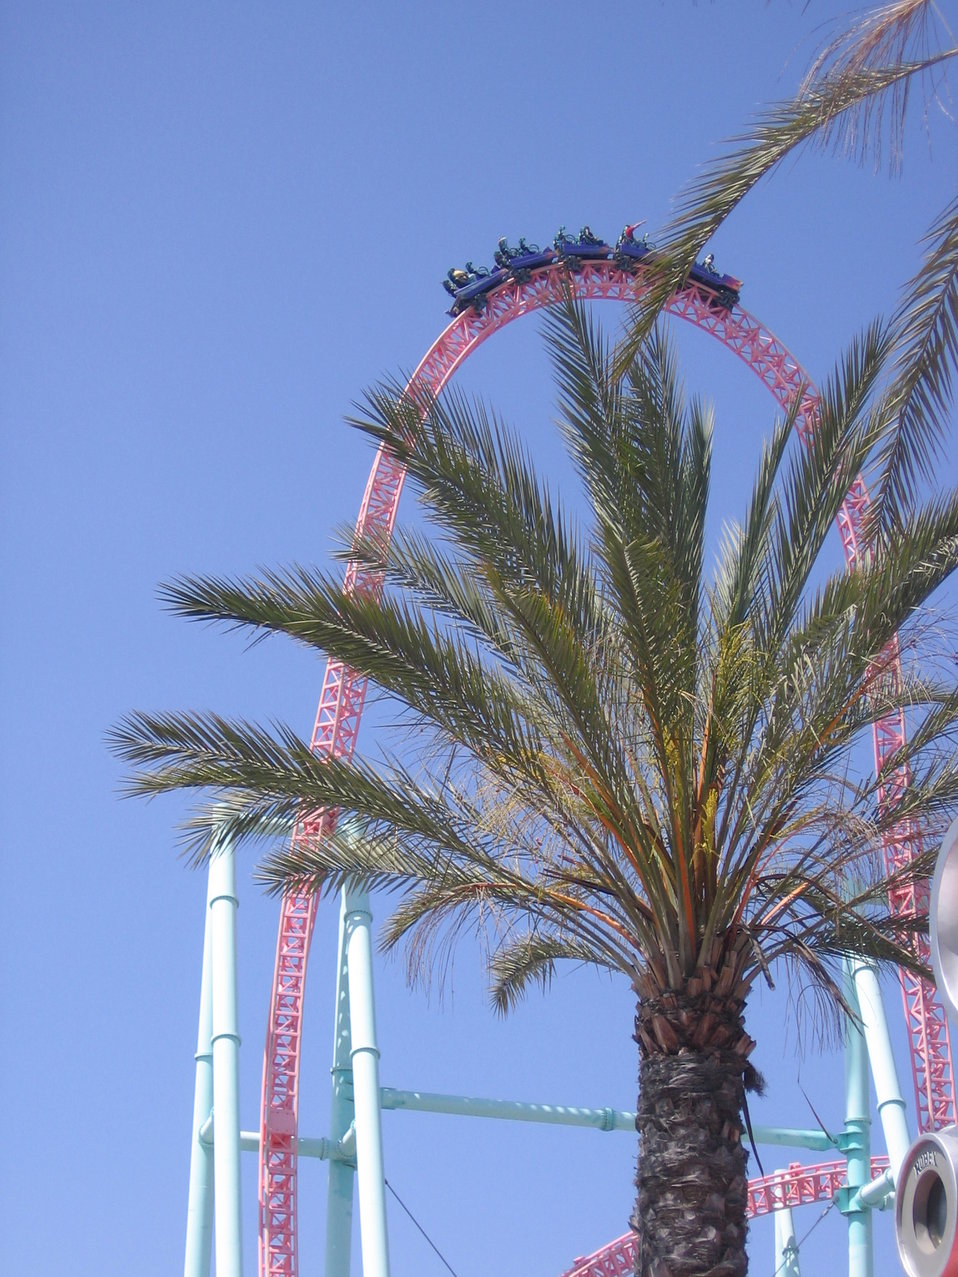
Taken by Bryan Bulmer in April 2008.